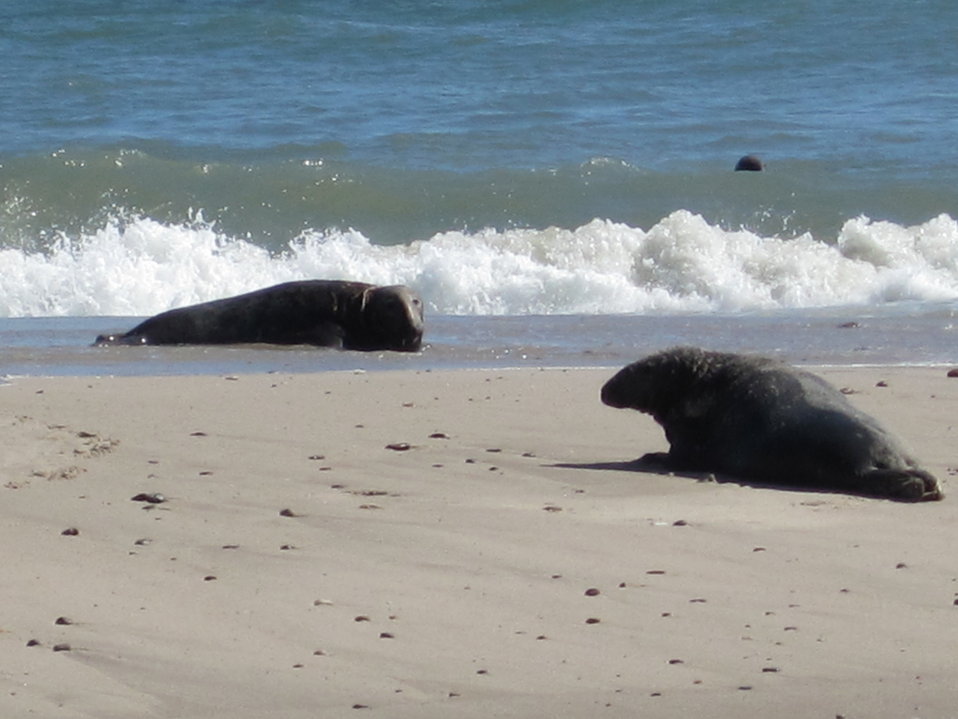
Seals on South Monomoy Island

Seals gather on South Monomoy Island, a few hundred yards from the lighthouse.

Credit: Keith Shannon/USFWS

Monomoy National Wildlife Refuge is part of the Eastern Massachusetts National Wildlife Refuge Complex.